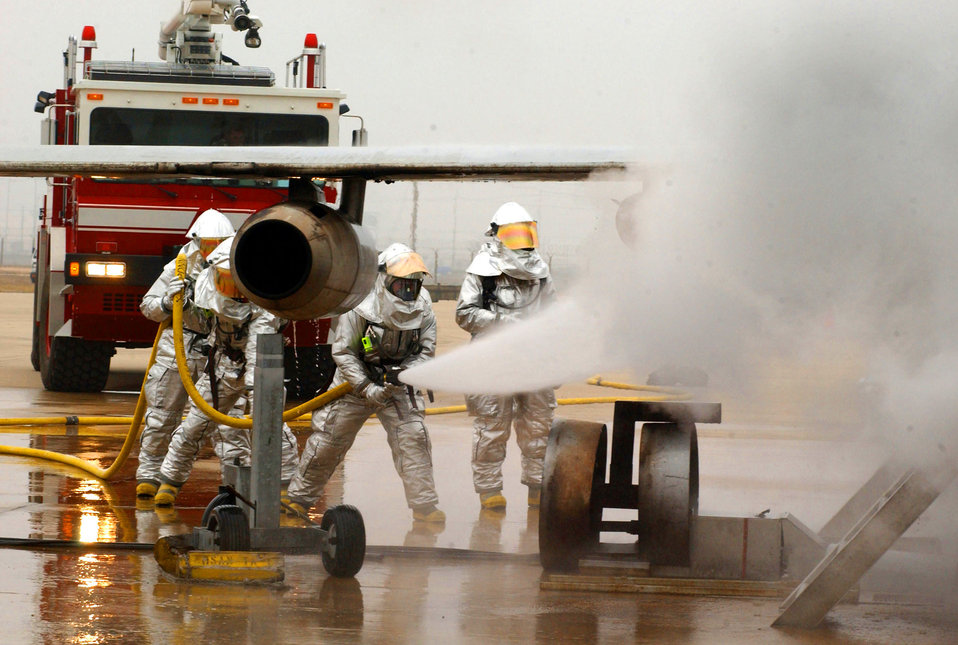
Fire drill

KUNSAN AIR BASE, South Korea -- Airman 1st Class Joseph Tvrdy, Senior Airman Sean Wethington and Staff Sgt. Jason Carlson, 8th Civil Engineer Squadron, douse a simulated aircraft fire March 24. The training is part of Operational Readiness Exercise Beverly High 0404.